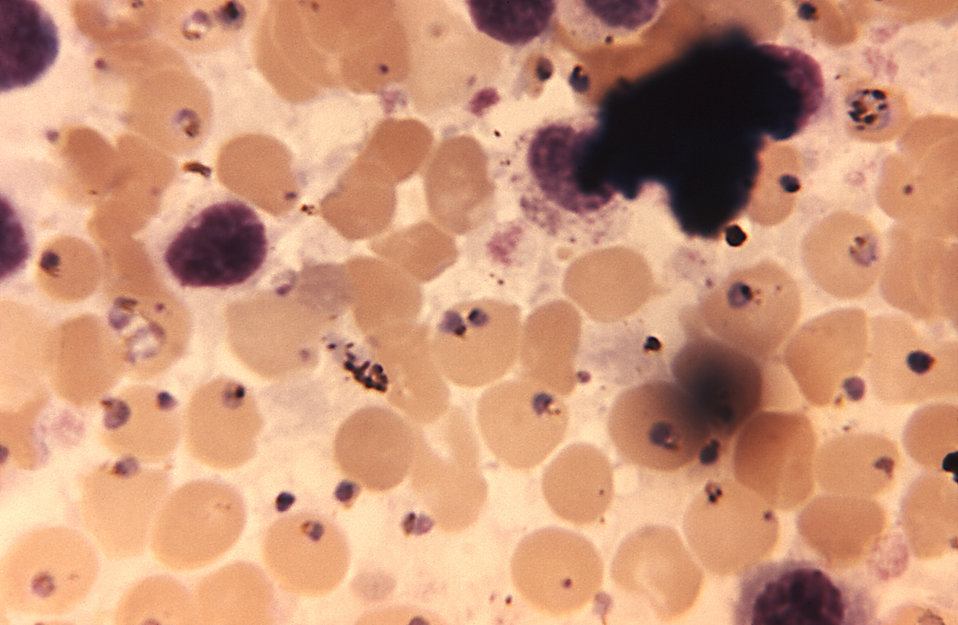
This micrograph of spleen tissue taken at autopsy depicts P. malariae using oil immersion technique; Mag. 1125X.